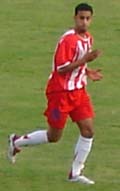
Libyan footballer Sahaban Hesham. 'i did Take this Photo in 11 June stadium during the Libyan Premier league Match Between Al Ittihad Vs Al Al Naser By my Sony p200 Digital cam. the date of this photo is 11-5-2006. sorry for the bad quality of the photo'